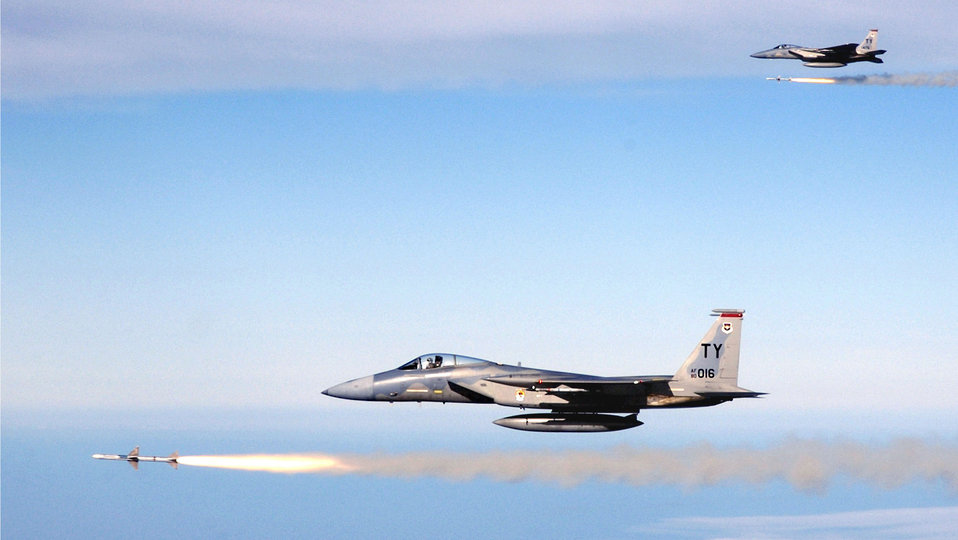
Simultaneous launch

OVER THE GULF OF MEXICO -- Capt. John Dean (foreground) and Maj. Mark MacLean simultaneously fire AIM-7 Sparrow radar-guided missiles during a weapons-evaluation mission. Dean and MacLean are both F-15 Eagle instructor pilots assigned to the 1st Fighter Squadron at Tyndall Air Force Base, Fla.